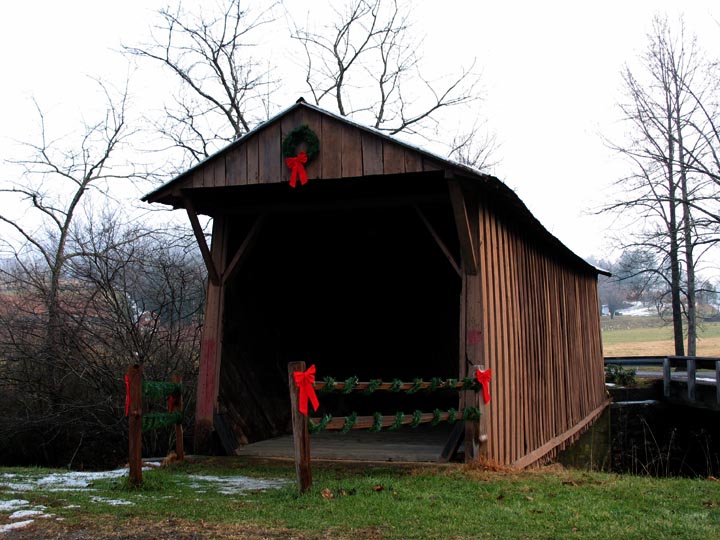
A photo of the Jack's Creek Covered Bridge in Patrick County, Virginia, taken by M.L. Devall in December 2004.